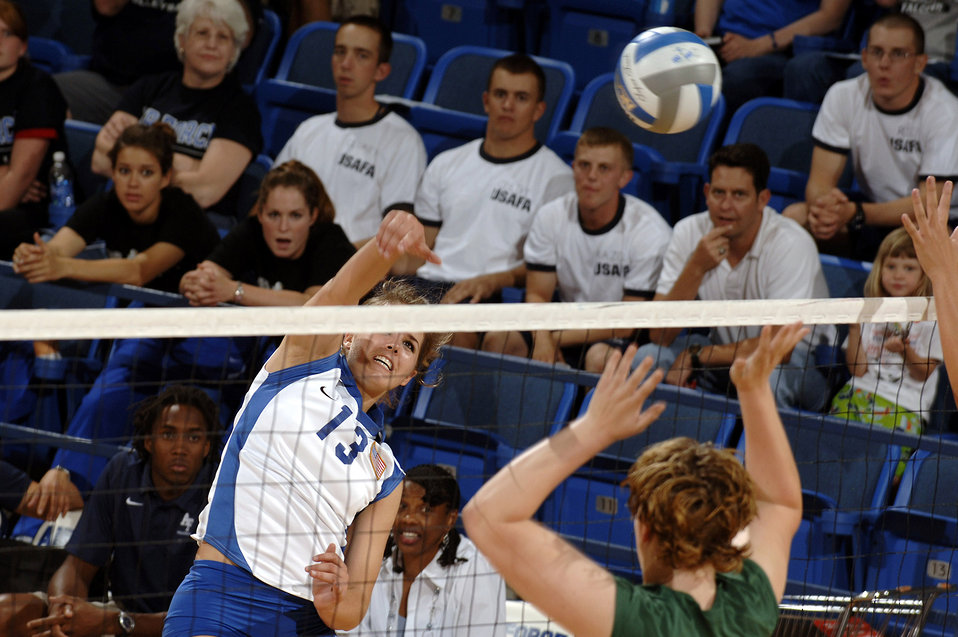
Cadets place second at volleyball invitational

U.S. Air Force Academy freshman Caroline Kurtz delivers one of her four kills against Chicago State Aug. 24 at Clune Arena at the Academy in Colorado. The Falcons swept the Cougars 3-0 on their way to a second place finish in the Air Force Invitational Tournament.